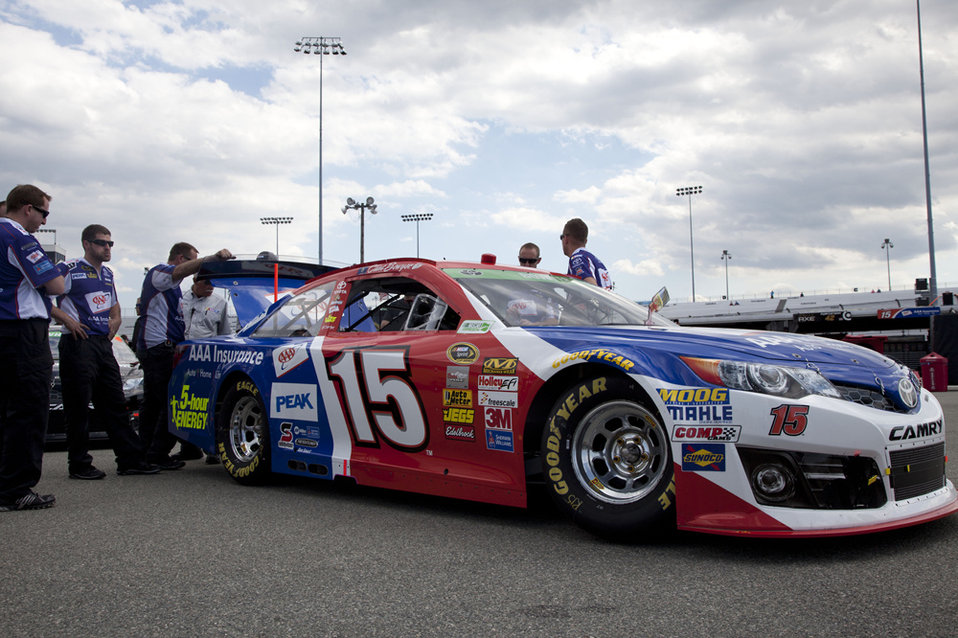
NASCAR drivers use some of the most advanced fuel technologies, helping educate fans about new technology. Before every race, the cars must pass inspection to ensure they meet NASCAR standards. Pictured here is part of the inspection process at the Richmond International Raceway.